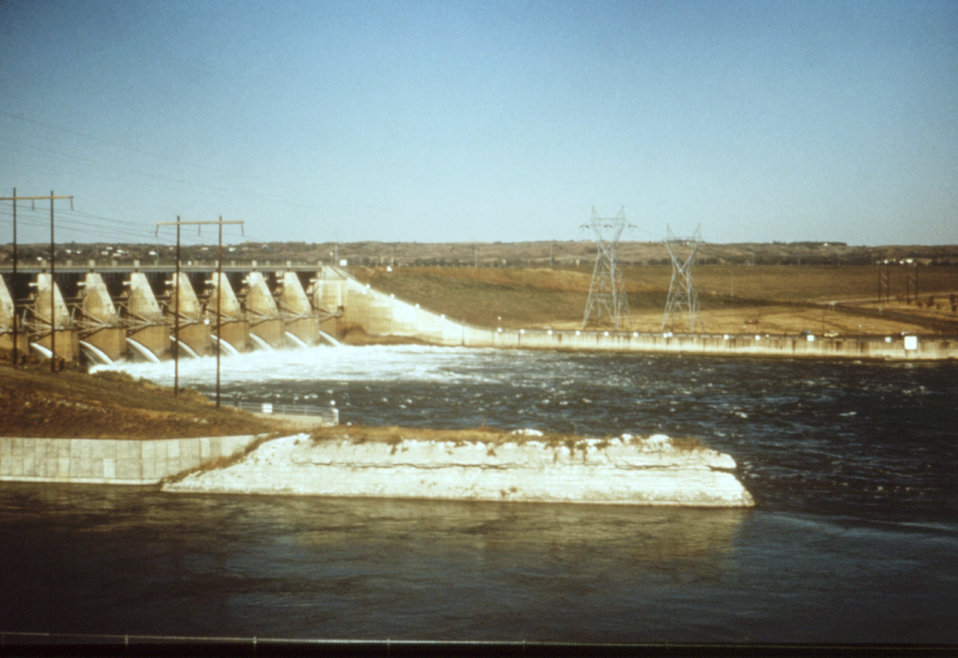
This 1976 photograph shows the Gavins Point Dam spillway at Lewis and Clark Lake in Nebraka.